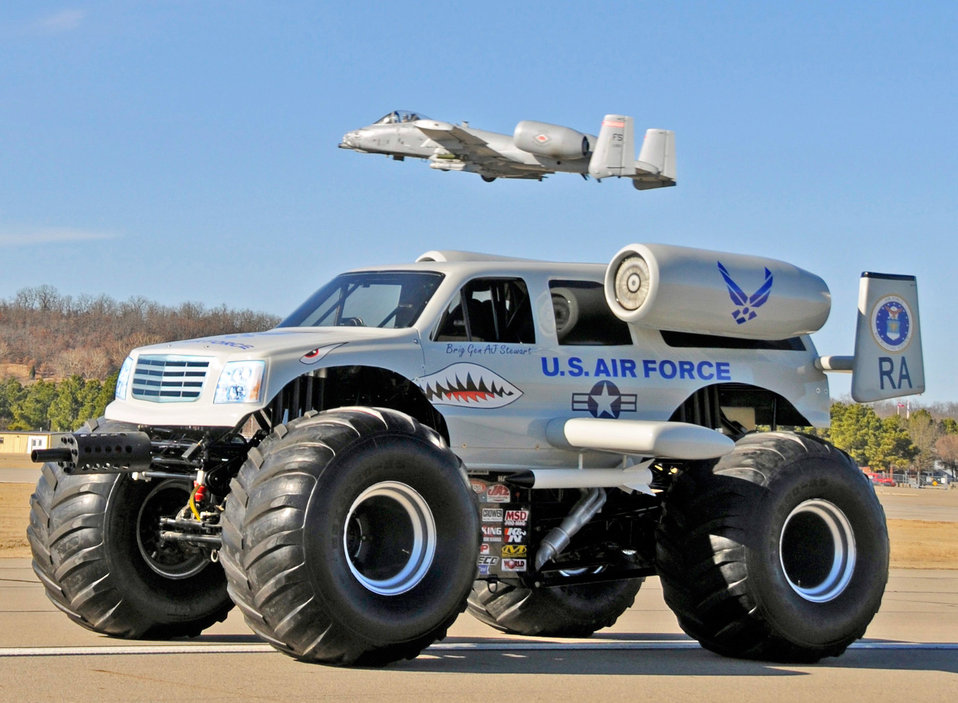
Charging through

The Air Force Recruiting Service's A-10 Monster Truck made an appearance at the 2010 Wings Over Whiteman Air Show and Open House, Sept. 18 and 19, 2010, at Whiteman Air Force Base, Mo.